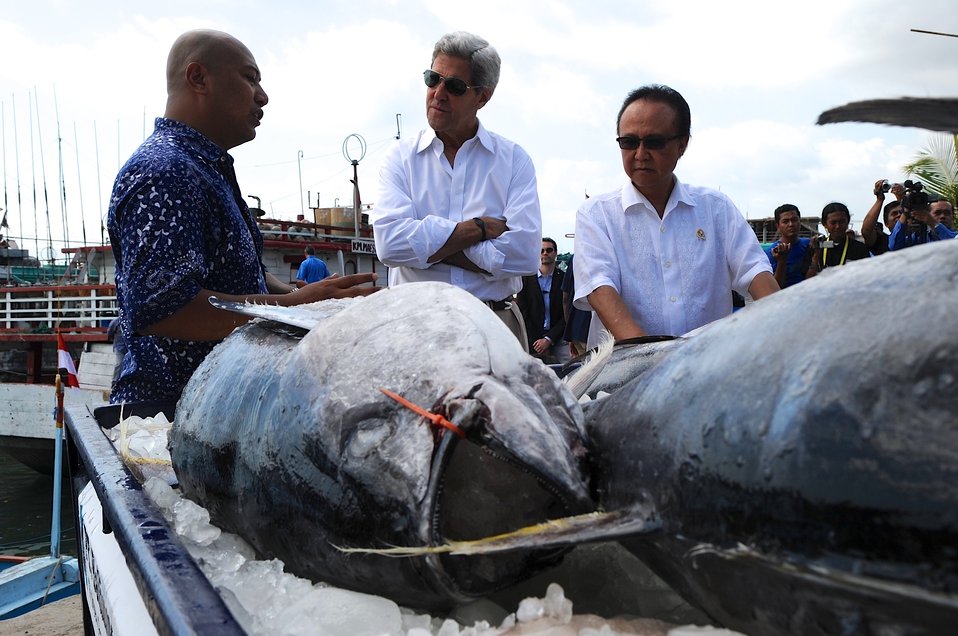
Secretary Kerry Visits Benoa Port in Indonesia

U.S. Secretary of State John Kerry listens as Aditya Utama, director of the non-governmental organization Fishing and Living program, and Sharif Cicip Sutardjo, Indonesian Minister of Marine Affairs and Fisheries, provide a briefing on a sustainable tuna fishing operation supported by USAID in Bali, Indonesia, October 6, 2013.